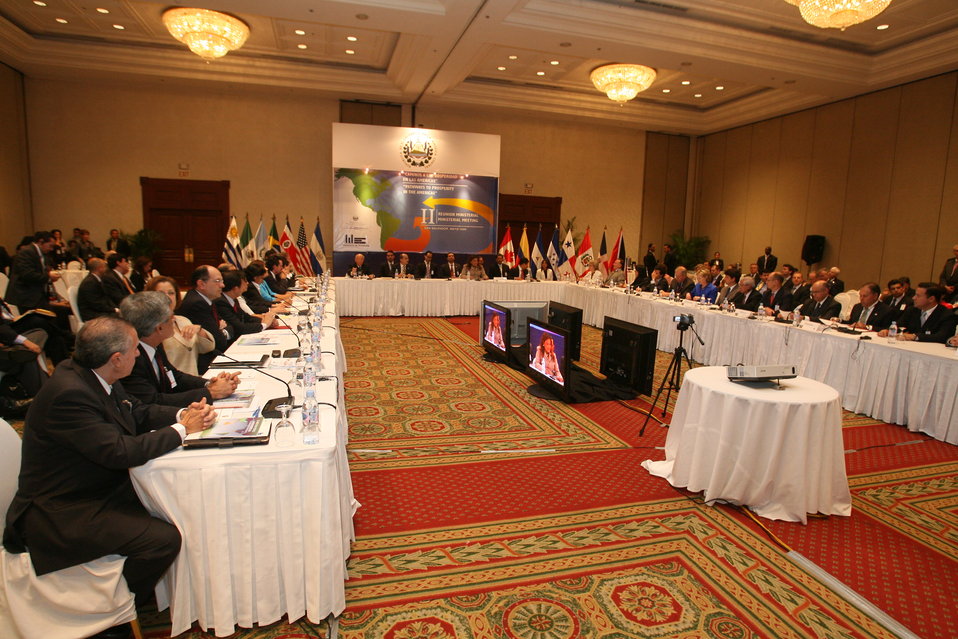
Second Pathways to Prosperity Ministerial Meeting

U.S. Secretary of State Hillary Rodham Clinton listens to one of the participants of the Second Pathways to Prosperity Ministerial Meeting held in San Salvador on May 31, 2009. Diplomats from more than a dozen countries of the Western Hemisphere met to discuss mechanisms for strengthening trade and investment, cooperation, and business facilitation in the region.